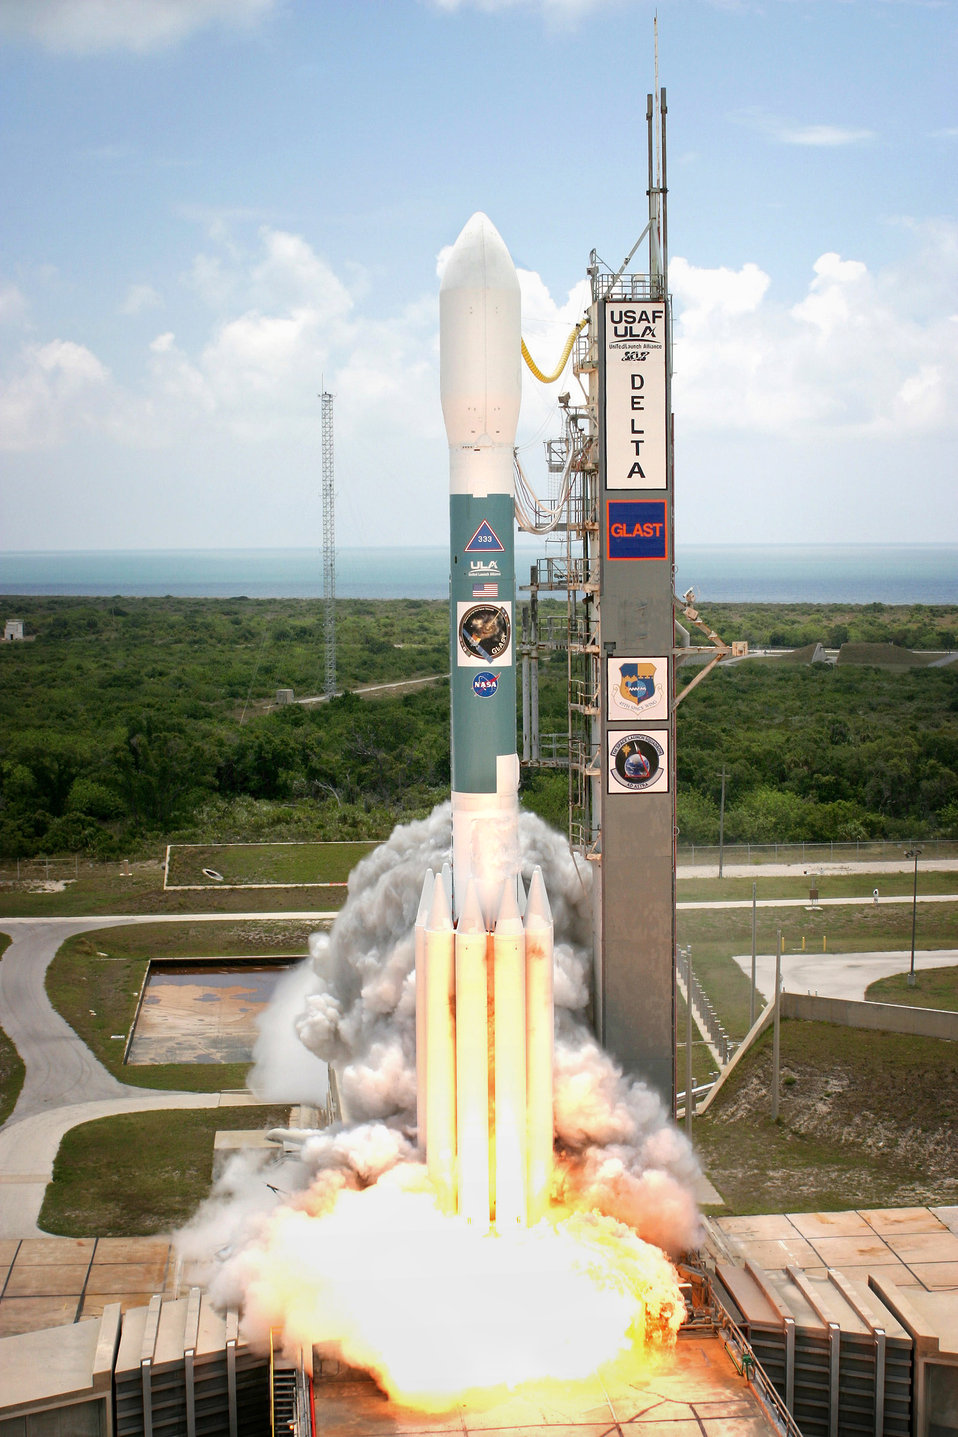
Countdown to research

A Delta II launches from Cape Canaveral Air Force Station June 10 carrying a Gamma-ray Large Area Space Telescope intended to study gamma ray phenomenon. The GLAST data will enable scientists to answer questions across a broad range of topics.